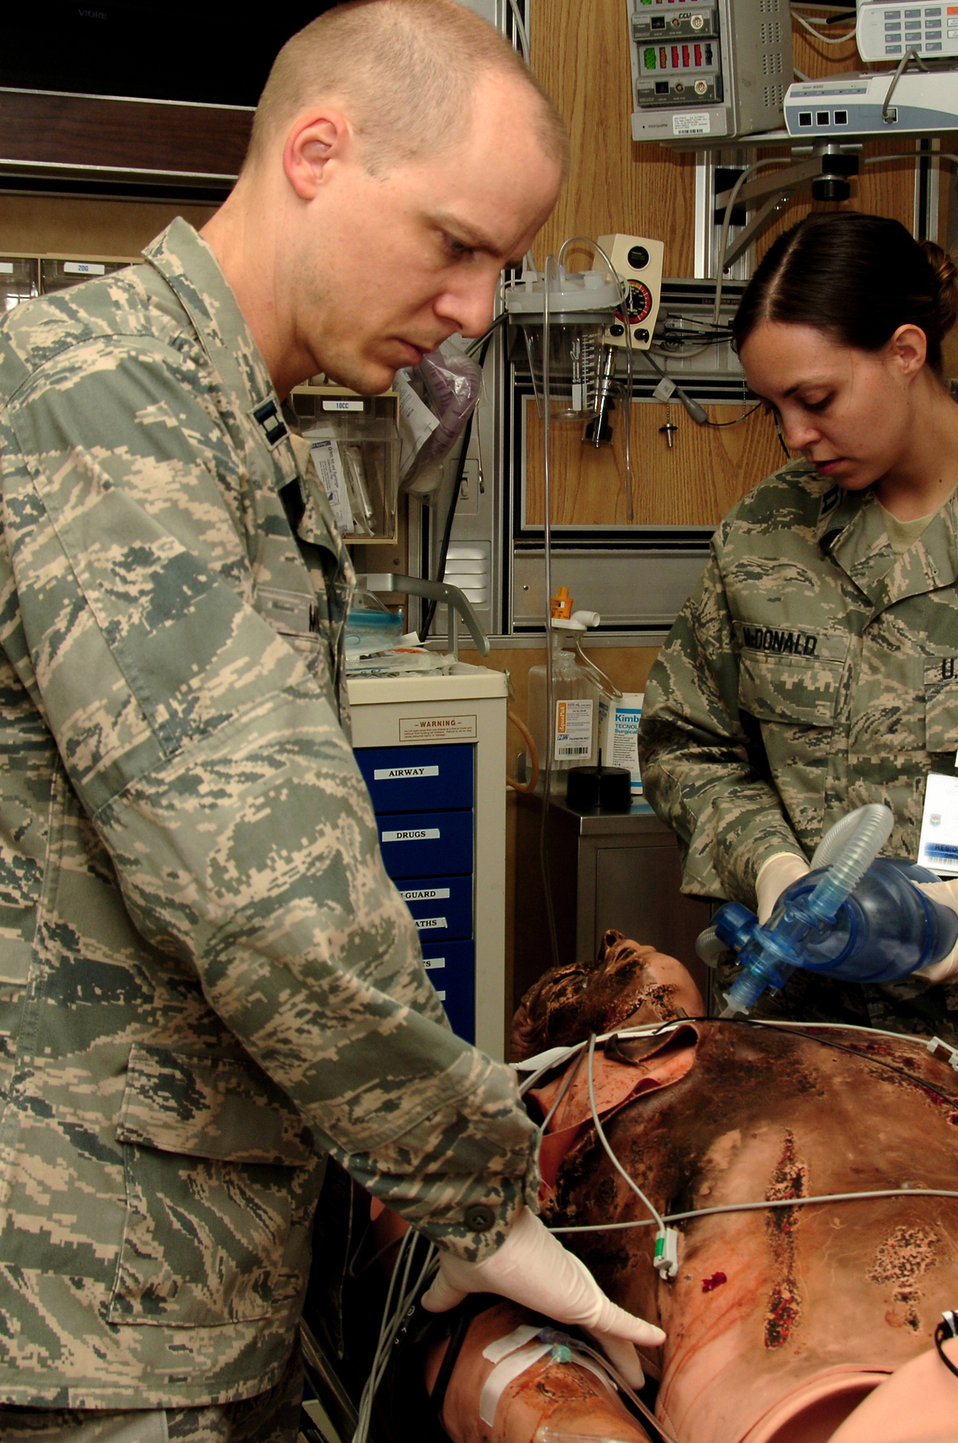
Simulation grand rounds trains EM residents

Capt. (Dr.) Tylan Muncy and Capt. (Dr.) Carolyn McDonald evaluate a burn patient during simulation grand rounds May 21, 2010, in the Wilford Hall Medical Center simulation center at Lackland Air Force Base, Texas. The simulation cases can be adapted and created to focus on the needs of a wide range of learners to include paramedics, nurses, medical students and physicians. Doctor Muncy is with the 59th Surgical Specialties Squadron. Doctor McDonald is with the 59th Emergency Medicine Squadron. Both doctors are emergency medicine residents.